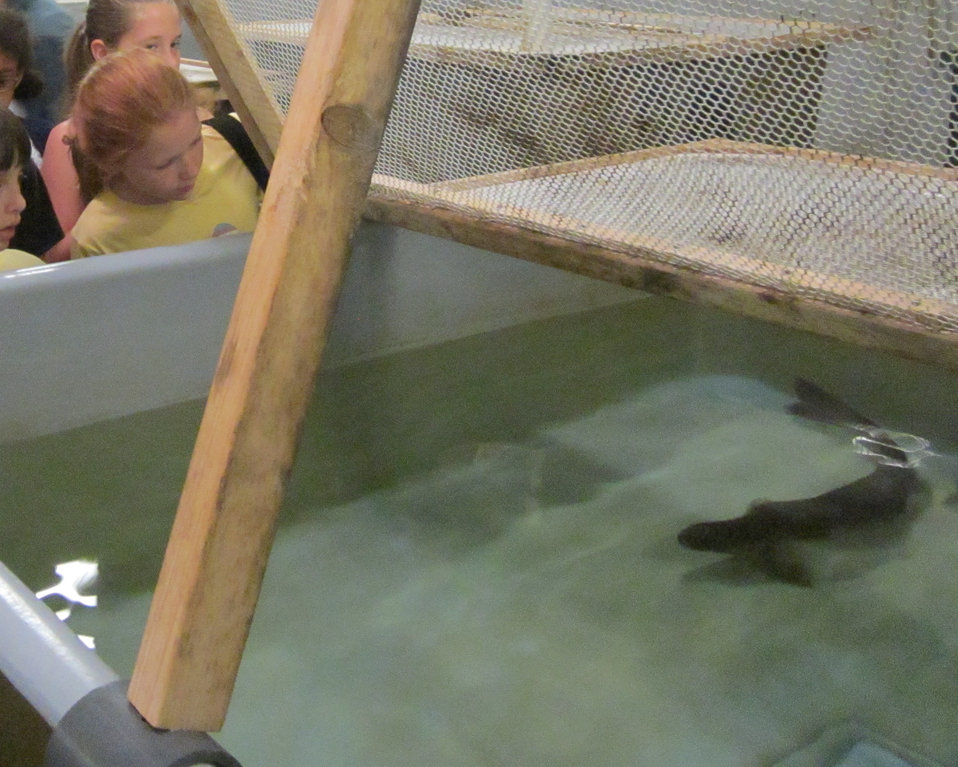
Glimpse of a rare fish

Sunderland, MA, July 26, 2012: Nature day campers from the Hitchcock Center for the Environment view an adult Atlantic salmon that had returned to the Connecticut River and been transported to the Richard Cronin National Salmon Station for spawning. The fish was one of only 54 adults that returned to the Connecticut River in 2012.